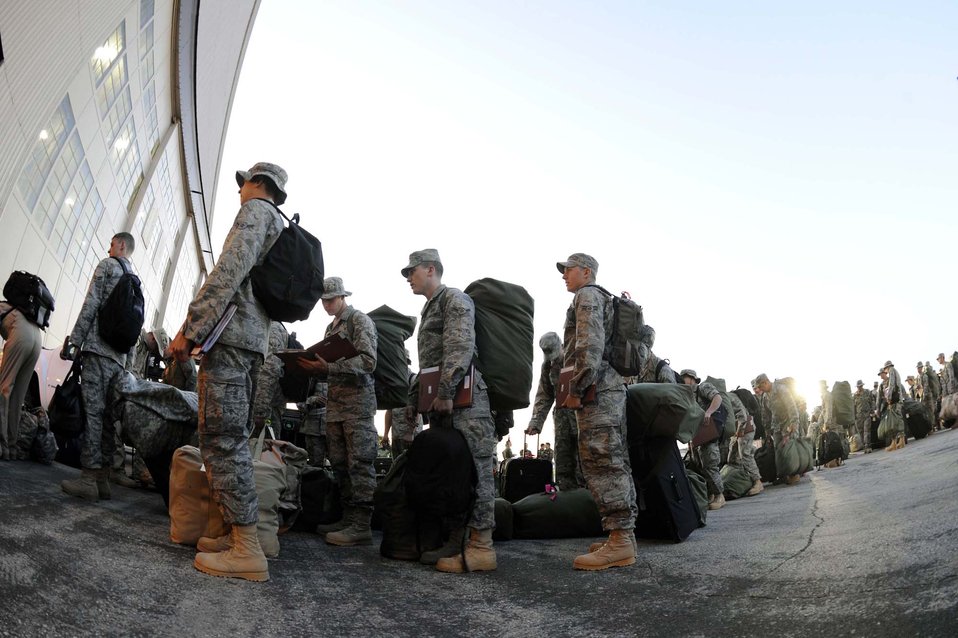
Airmen deploy to Southwest Asia

Members of the 28th Bomb Wing prepare to initially in-process and check their luggage before deploying from Ellsworth Air Force Base, S.D. The Airmen deployed to Southwest Asia in support of B-1 Lancer operations.